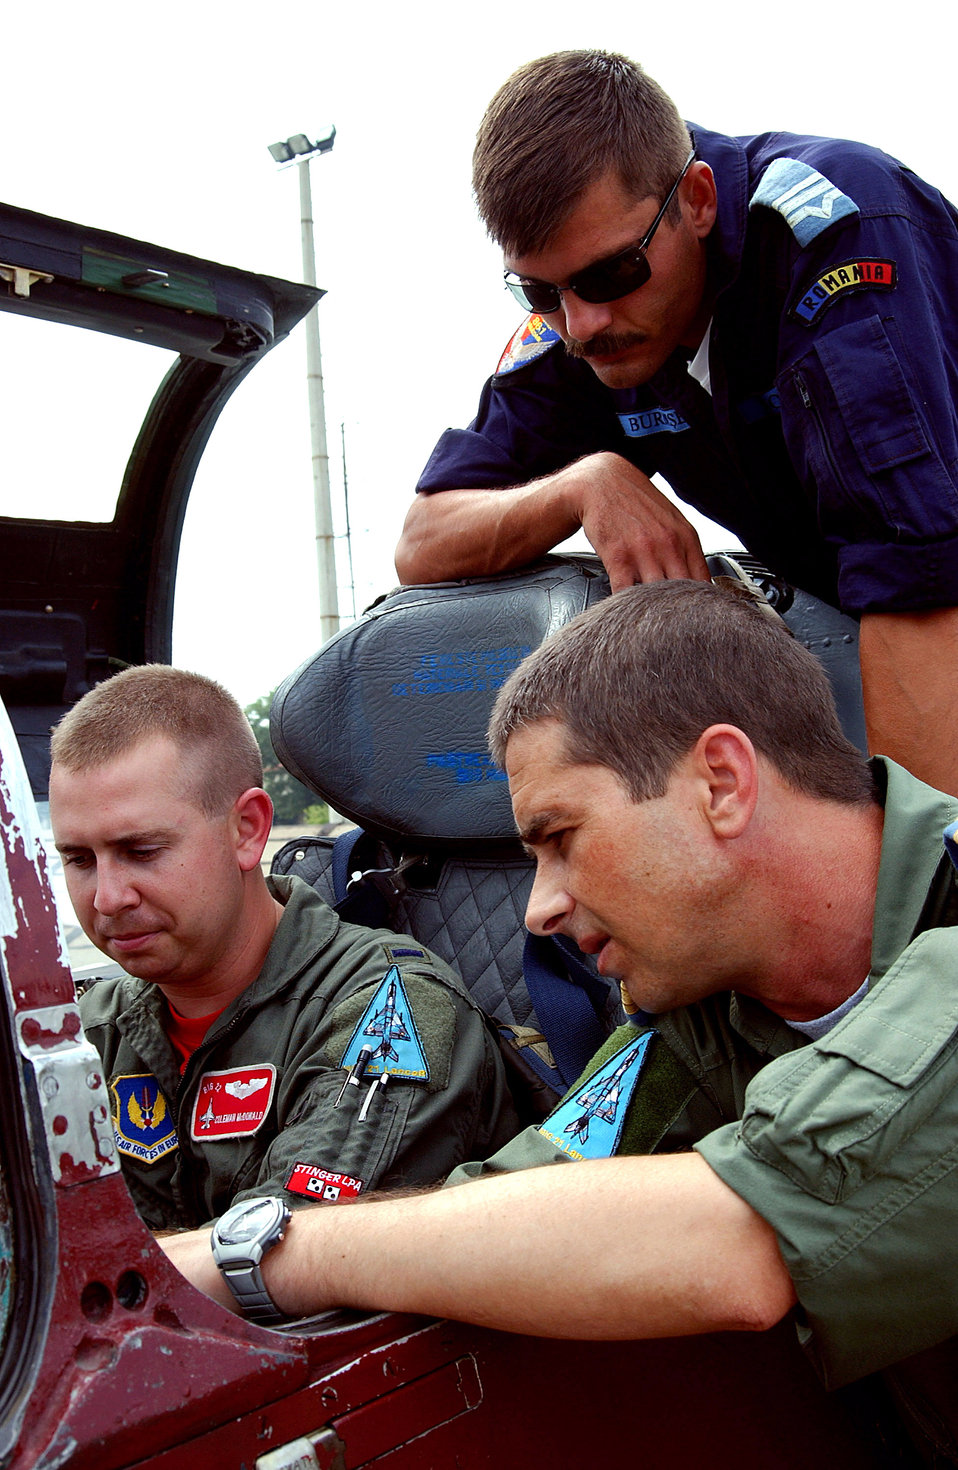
Viper Lance pilots trade rides

First Lt. Coleman McDonald sits in the cockpit of a MiG-21 Lancer at Mihail Kogalniceanu Air Base, Romania, on Aug. 11, while Lt. Cmdr. Eugene Matache (lower right) and Warrant Officer Third Class Sorin Burdusel of the Romanian air force walk through operating instructions. Lieutenant McDonald is an F-16 Fighting Falcon pilot with the 22nd Expeditionary Fighter Squadron participating in Viper Lance 2006.